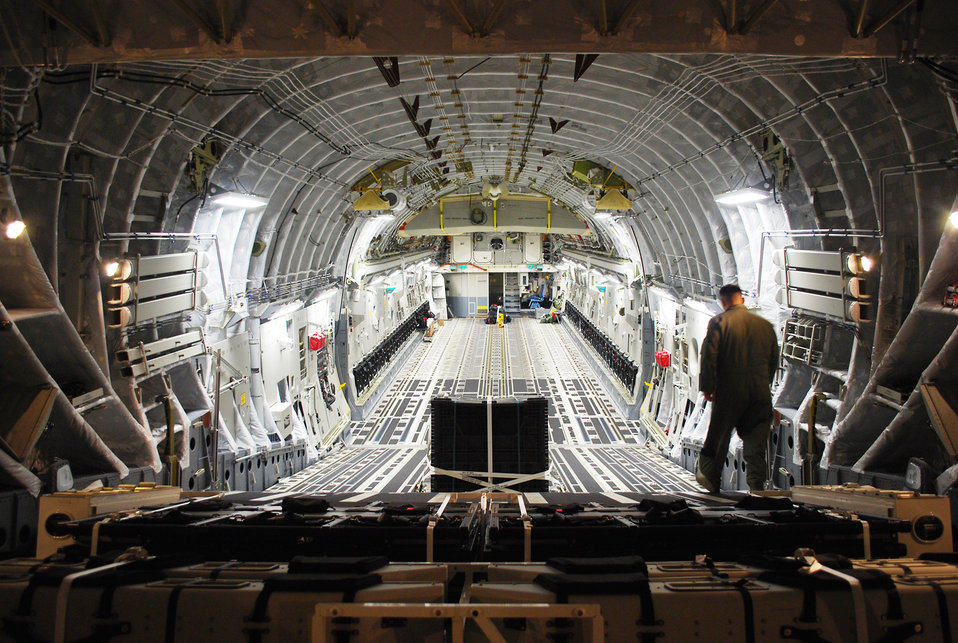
Bright and shiny cargo

Master Sgt. Michael Lang inspects the cargo area of the newest C-17 Globemaster III delivered to Charleston Air Force Base, S.C., Oct. 28, 2009. Accompanied by an all-Reserve crew, Lt. Gen. Charles Stenner Jr., commander of Air Force Reserve Command, flew the aircraft to Charleston.